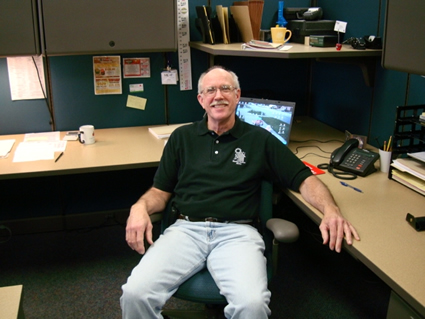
Pete Boogaart

Pete, who’s a married empty-nester with four kids, lost his job in January after keeping Americans safe and comfortable by testing car parts for the last 15 years. But through volunteering for a local action agency, he retooled his old skills and scored a new job as a weatherization inspector.